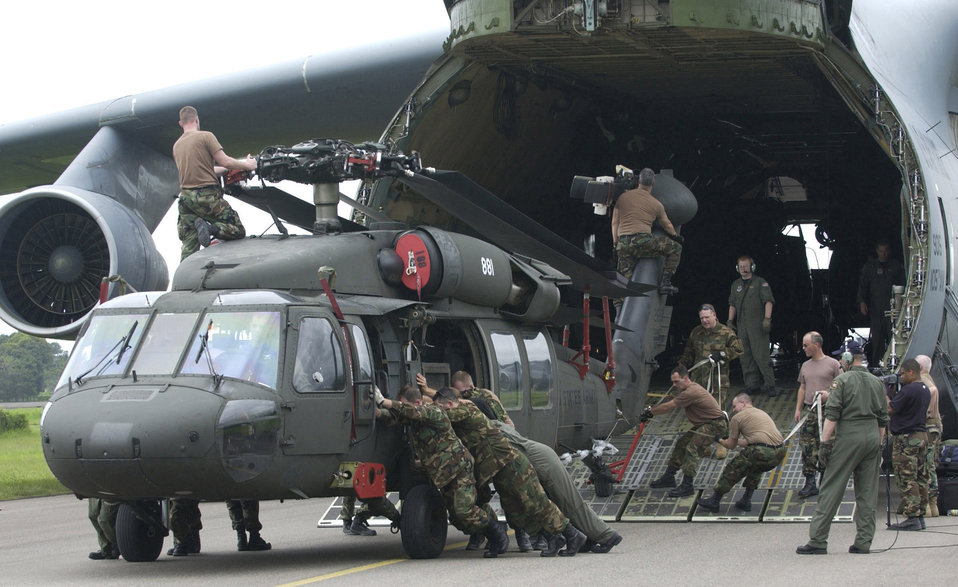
NEW HORIZONS 2006

C. MONCADO AIR BASE, LA CEIBA, Honduras -- Airmen unload aUH-60L Black Hawk from a C-5 Galaxy. The C-5 is from the 137th Airlift Squadron, New York Air National Guard, in support of Operation New Horizons - Honduras. The joint exercise will provide new schools and a maternity clinic here.